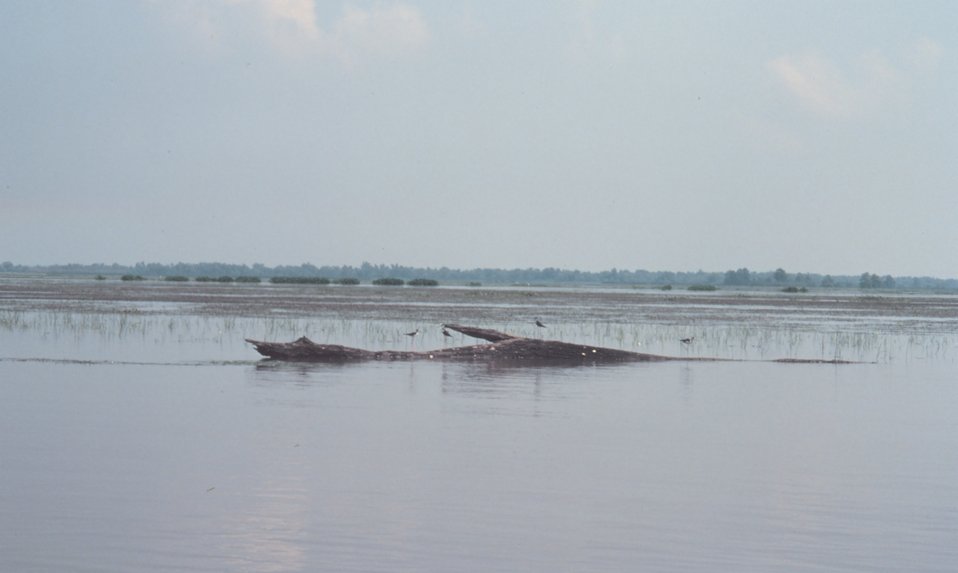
Submerged aquatic vegetation along the lower Atchafalaya. Whole trees frequently wash down the river at flood stage.